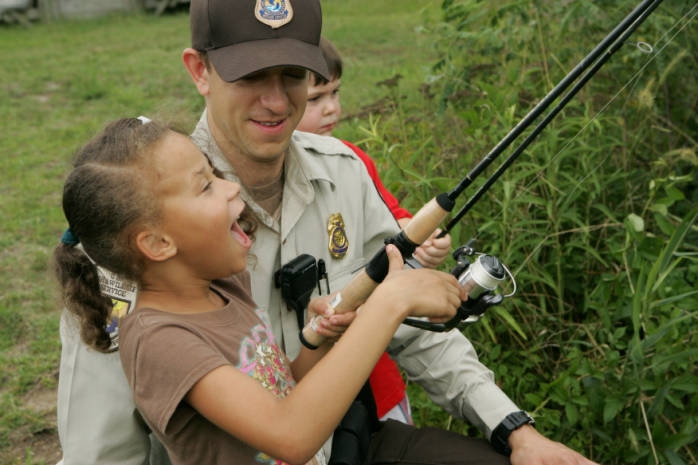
fishing on a refuge, Steve Hillebrand, usfws